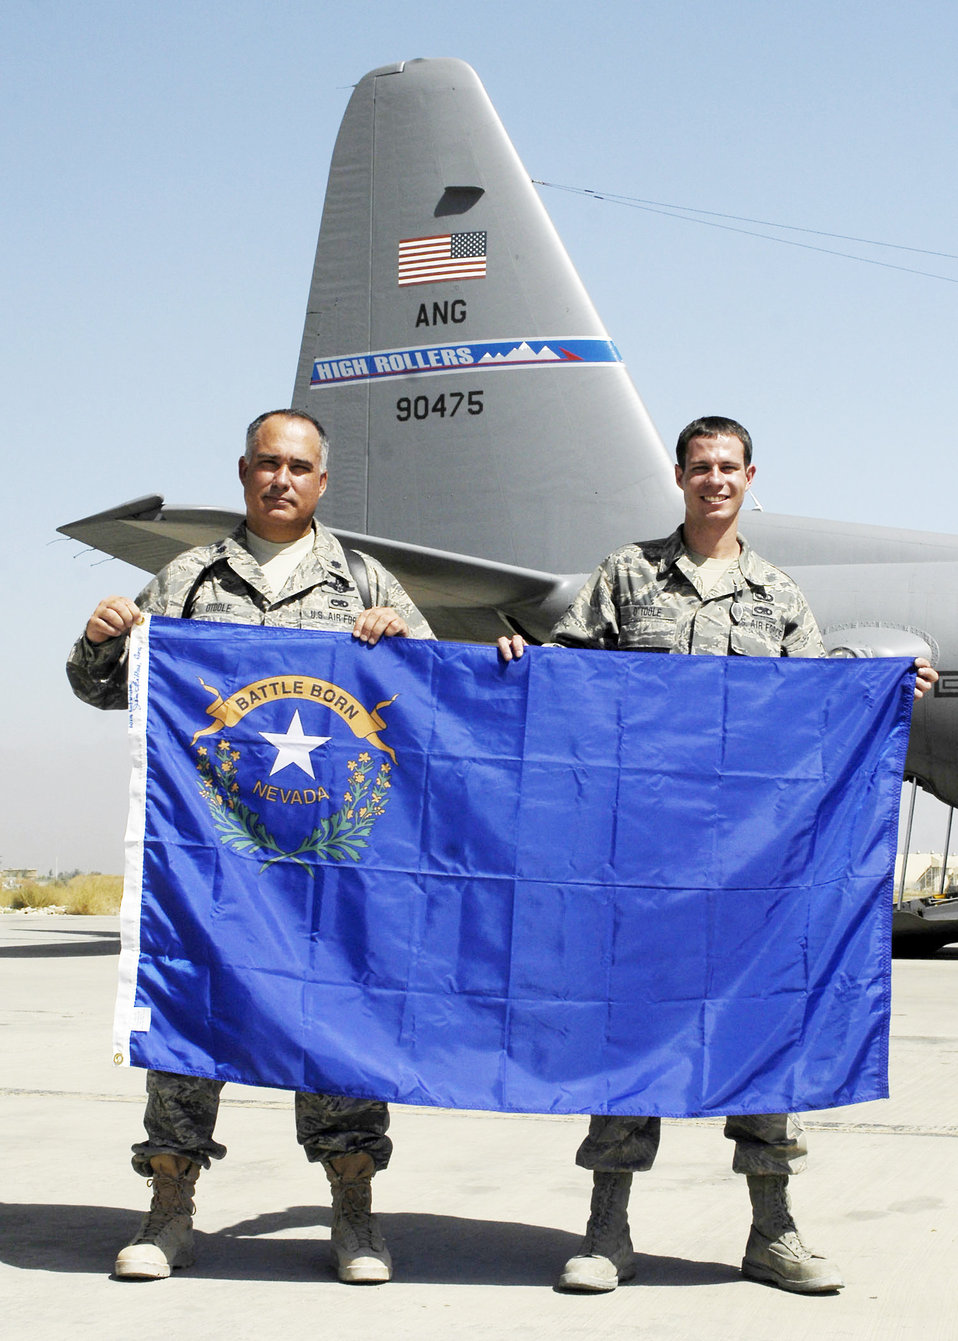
Father, son deploy to Afghanistan together

Lt. Col. Barltey O'Toole (left) and his son Senior Airman Bartley O'Toole hold the Nevada state flag Sept. 24, 2009, at Bagram Airfield, Afghanistan. Colonel O'Toole is the 774th Expeditionary Airlift Squadron director of operations and Airman O'Toole is a 774th EAS aircrew flight equipment journeyman.